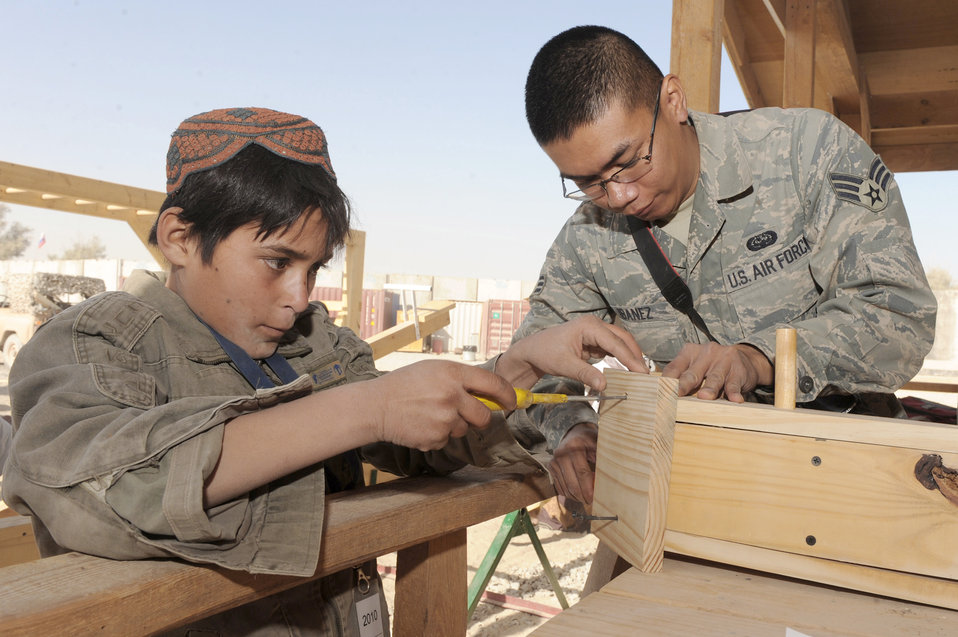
KAF bazaar school

Senior Airman Ismael Ibanez constructs a birdhouse with an Afghan child at the bazaar school Nov. 13, 2010, at Kandahar Airfield, Afghanistan. Airman Ibanez is a client system journeyman assigned to the 451st Expeditionary Communications Squadron.